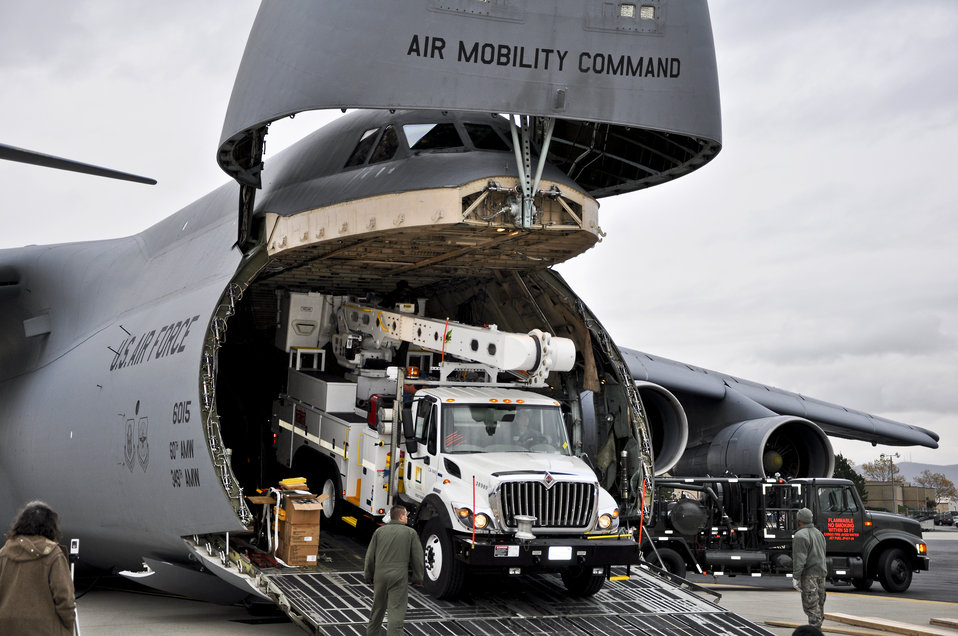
Hurricane relief efforts

Air Force crews offload Southern California Edison power repair equipment from a C-5 Galaxy on Stewart Air National Guard Base in Newburgh, N.Y., Nov. 1, 2012. The Defense Department initiated the airlift operation to aid recovery efforts in Hurricane Sandy's aftermath.